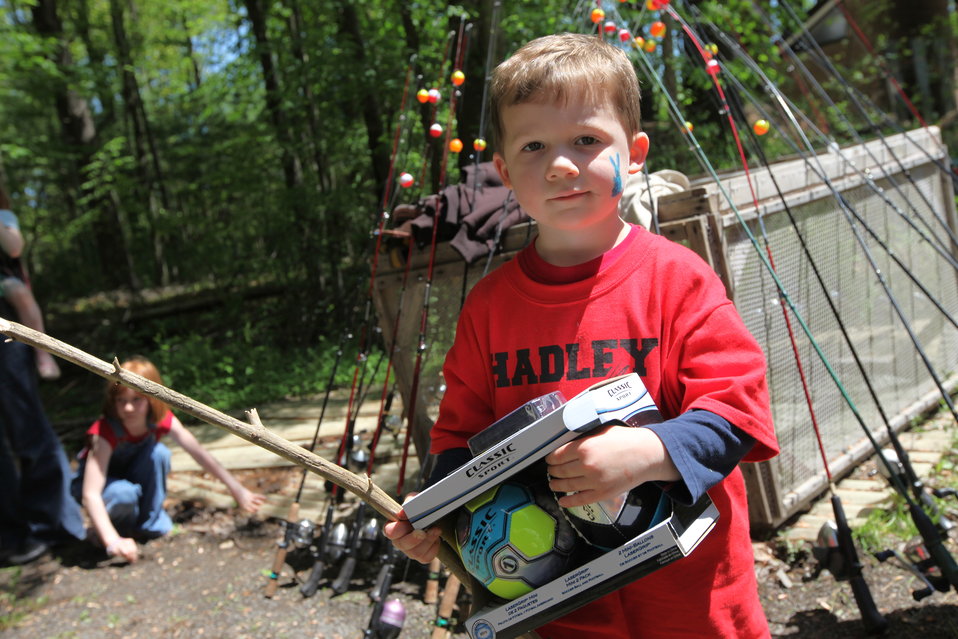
Youth Fishing Derby 2012

Megan Nagel/USFWS